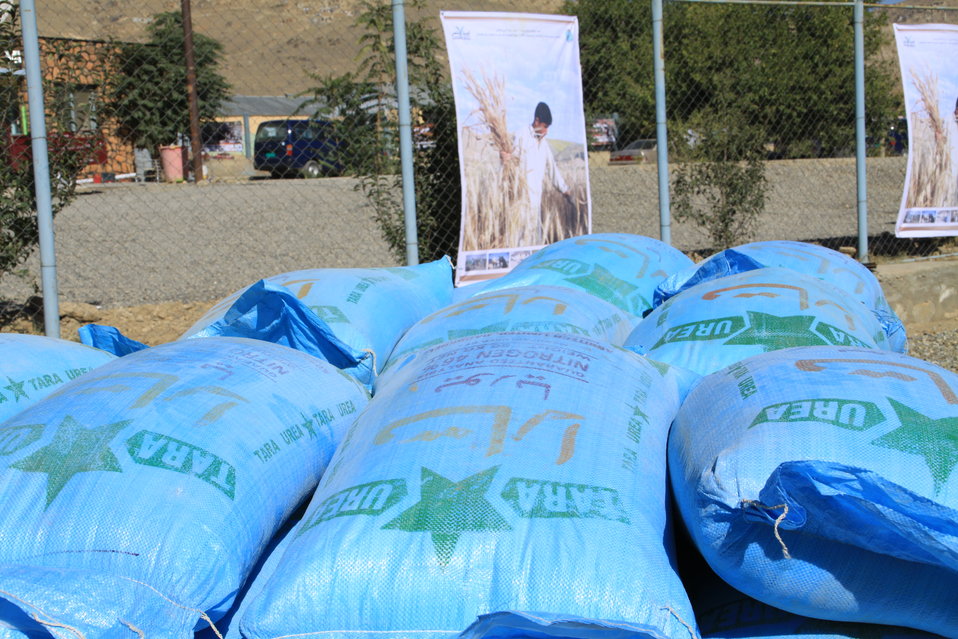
AVIPA Plus Wheat Seed Distribution 101005

US Ambassador Karl Eikenberry and USAID Acting Mission Director Kevin Brownawell joined the Minister of Agriculture, Irrigation and Livestock, H.E. Minister Mohammed Rahimi in signing a Memorandum of Understanding and distributing vouchers to area farmers for wheat and fertilizer.